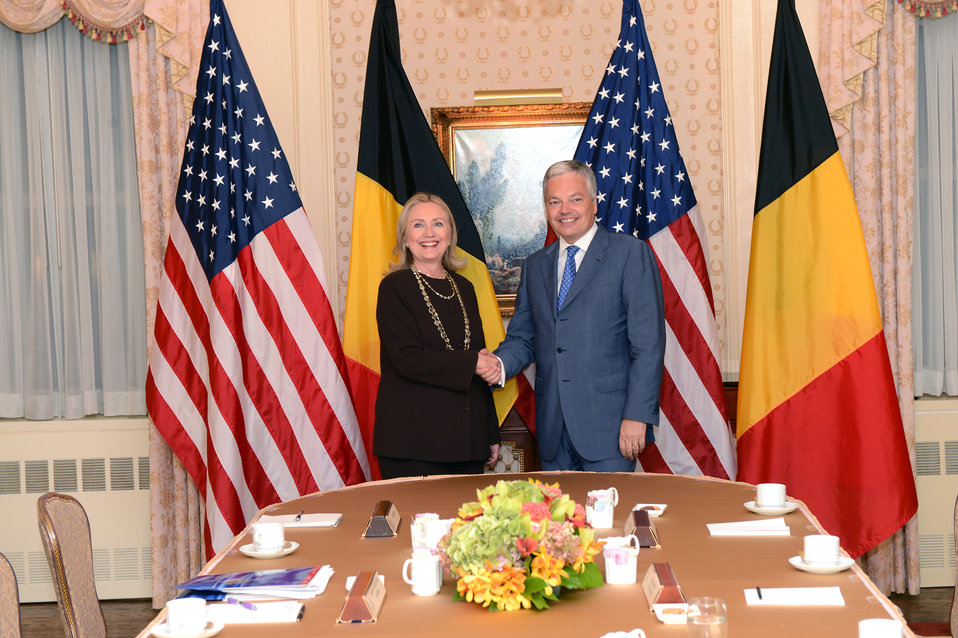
Secretary Clinton Meets With Foreign Minister of Belgium Reynders

U.S. Secretary of State Hillary Rodham Clinton meets with Foreign Minister of Belgium Didier Reynders in New York, New York on September 25, 2012.